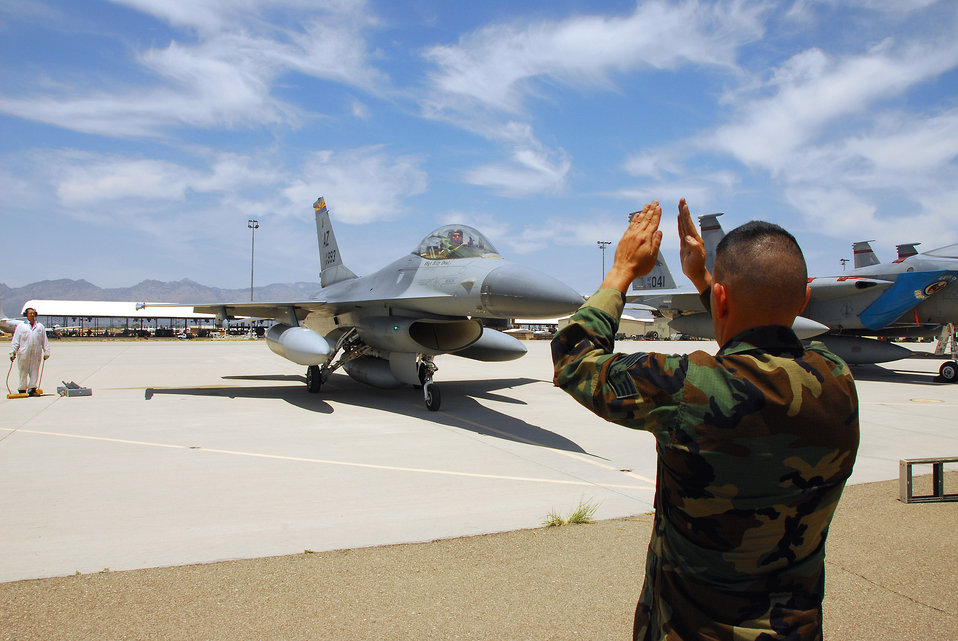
Air Guard retires last F-16A in service

Staff Sgt. Michael Brizuela marshals the last operational F-16A model Fighting Falcon in the Air Force into a parking spot at Davis Monthan Air Force Base, Ariz. The aircraft is being retired by the Arizona Air National Guard's 162nd Fighter Wing which now flies the more modern F-16C and F-16D models. This aircraft and two F-16Bs being retired will be stored at the Aerospace Maintenance and Regeneration Group at Davis-Monthan.